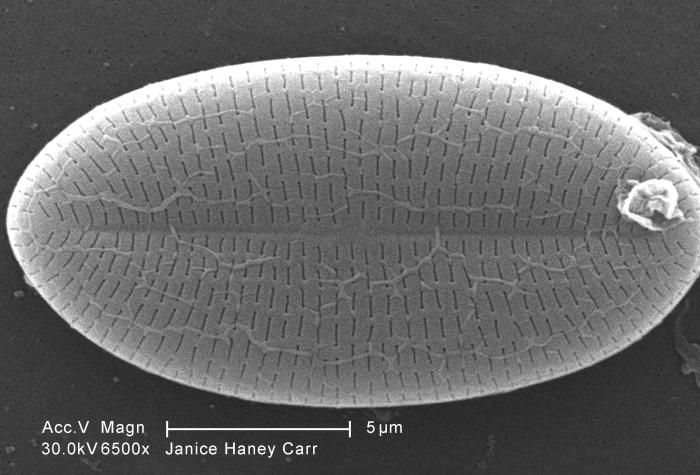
Magnified 6500X, this scanning electron micrograph (SEM) of an untreated water specimen extracted from a wild stream mainly used to control flooding during inclement weather, revealed the presence of unidentified organisms, which included bacteria, protozoa, and algae. In this particular image, a single unidentified diatomic microorganism was depicted revealing its wondrous symmetrical ultrastructural morphology. For a colorized version of this image see PHIL 11704.